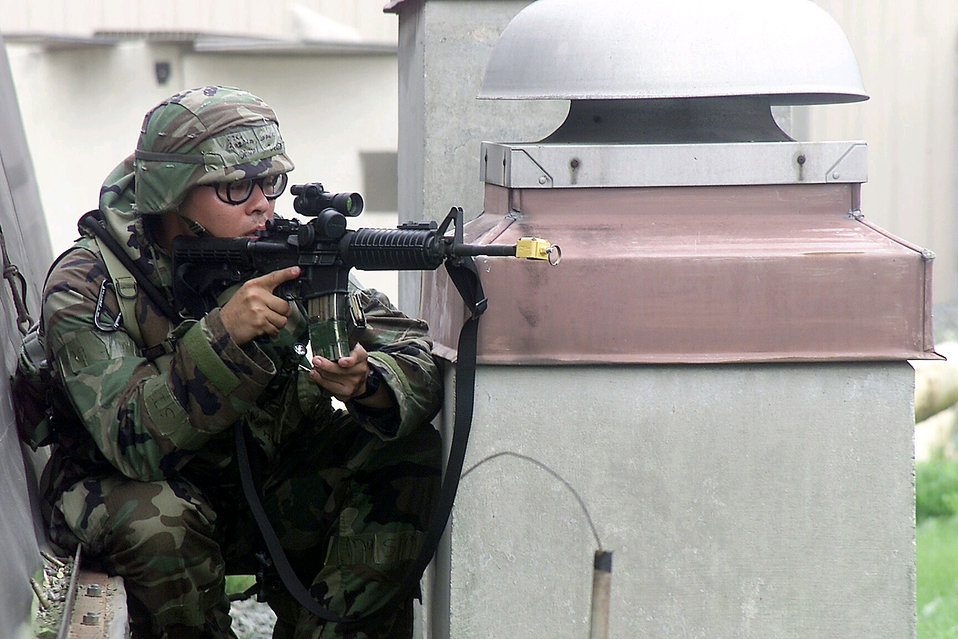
In fighting position

OSAN AIR BASE, South Korea -- Airman 1st Class John Garcia takes a fighting position against enemy forces attacking the logistics readiness compound here during exercise Beverly Bulldog 04-03 on July 21. Airman Garcia is a member of the 51st Security Forces Squadron.